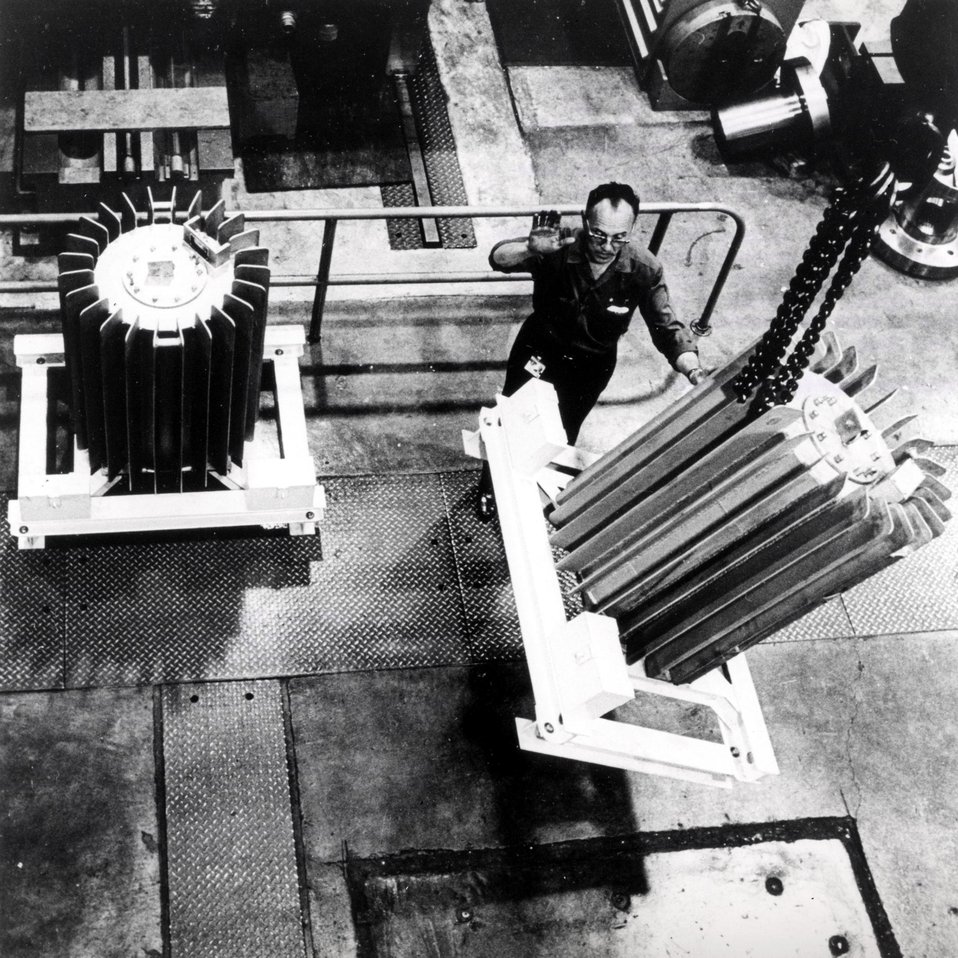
Copper-finned shipping containers... for ground transportation of the SNAP-27 radioisotope hear source special shipping containers have been developed for General Electric Missile and Space Division, Calley Force, Pa., by the Columbus, Ohio, Laboratories of Battelle Memorial Institute.